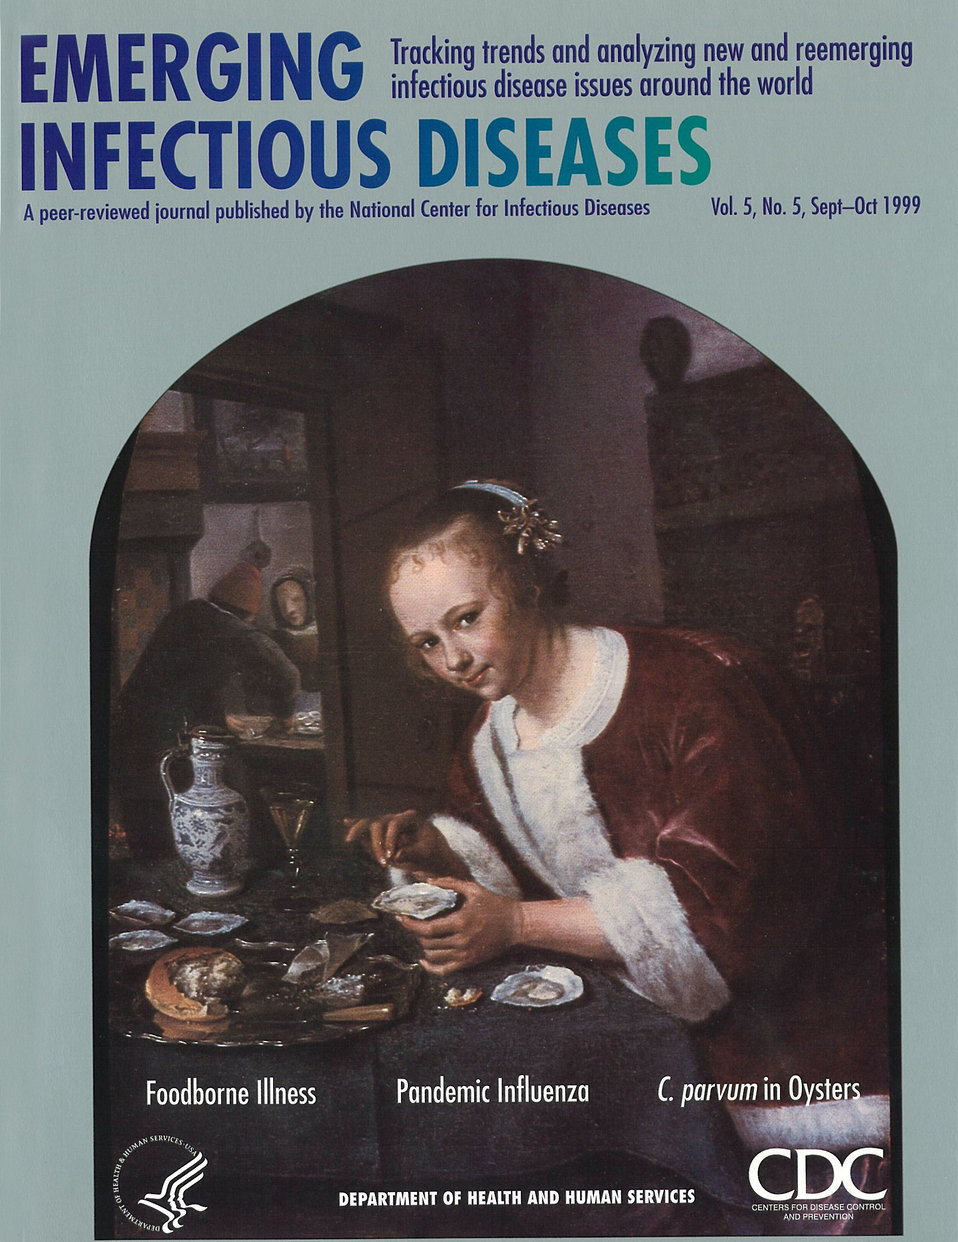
Emerging Infectious Diseases (EID) cover artwork for Volume 5, Number 5, September-October 1999 issue.